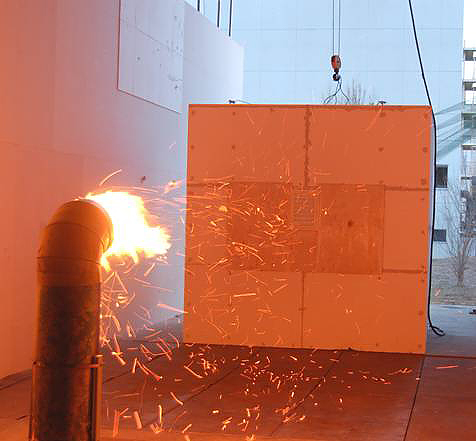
NIST Firebrand Device Could Save U.S. and Japanese Homes

NIST researchers use a firebrand generator to duplicate firebrand showers seen in wildland-urban interface fires. Here the firebrands are aimed at a three millimeter screen mesh. Combustible material is behind the screen. The test seeks to ascertain the likelihood that embers could penetrate building vents and cause a home fire.